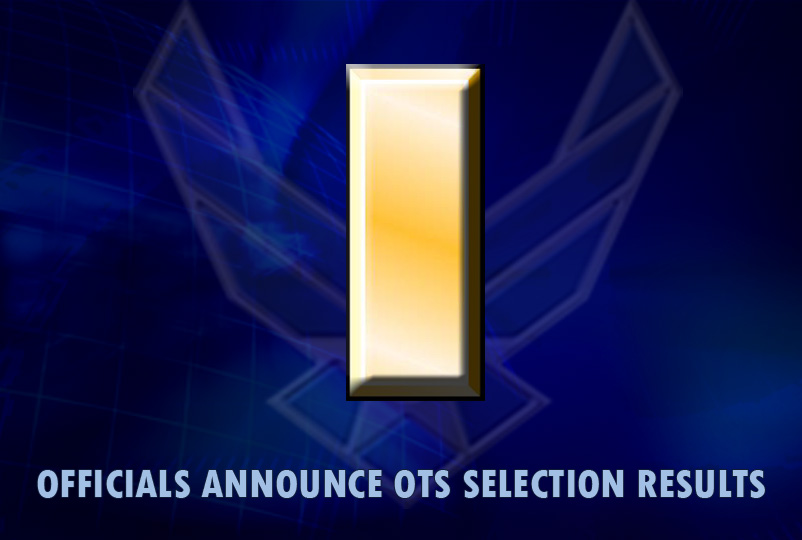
OTS selection results